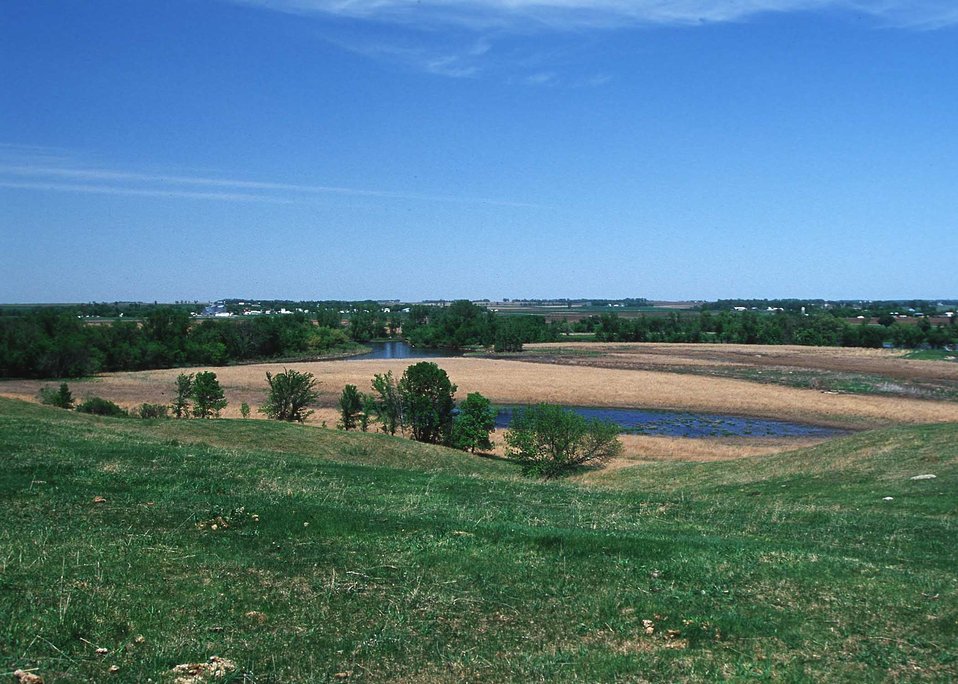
Upland area of a wetland in South Dakota.